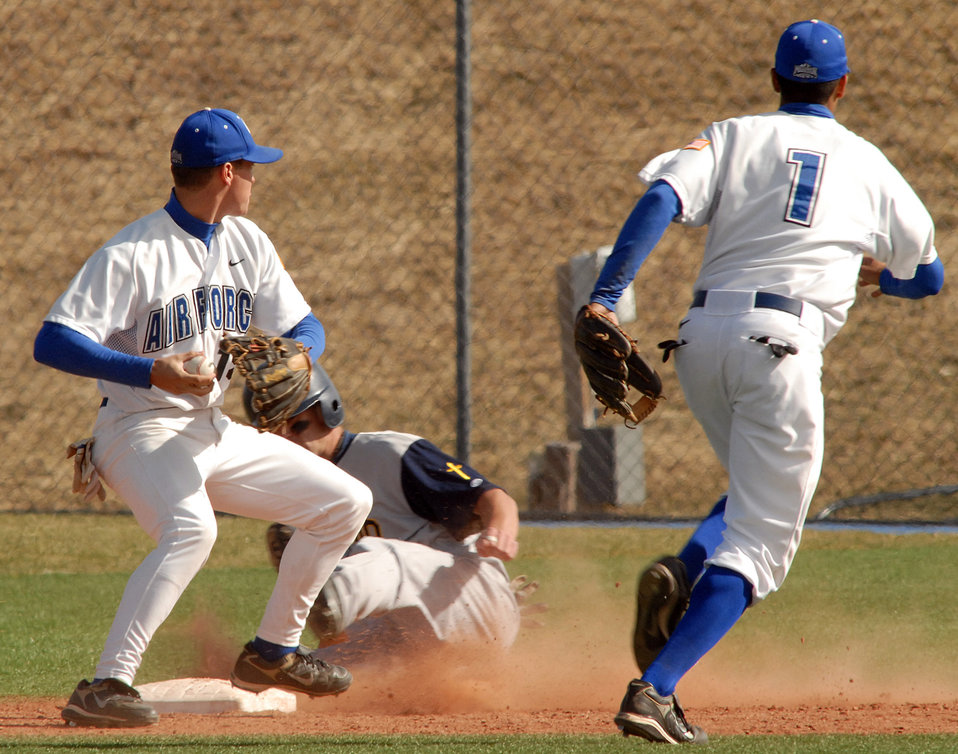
Air Force Rallies To 10th Inning Win Over Colorado Christian

Freshman second baseman Nathan Carter throws to first to complete the double play as the Falcons rallied to a 10th inning 9-8 win against Colorado Christian in non conference baseball action at the Academy's Falcon Field. Carter went 1 for 5 as Air Force tallied 12 hits and did not commit an error in the field on the day. The Falcons improve to 11-19 on the season.